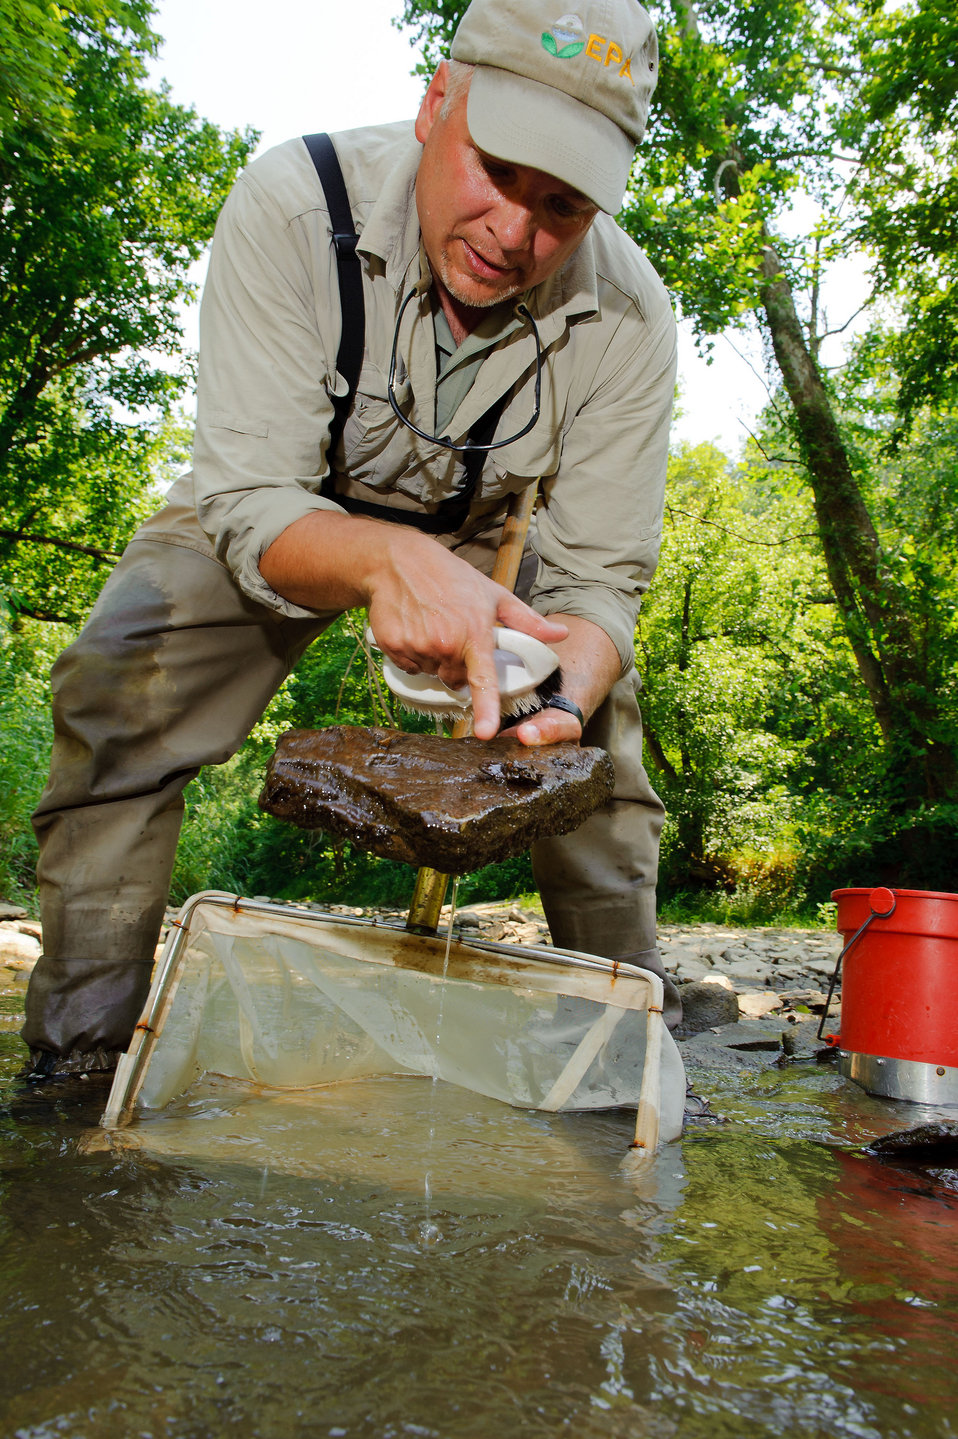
June 20, 2012 Collecting Aquatic Insects in Wheeling Creek in West Virginia

Frank Borsuk of EPA collects aquatic insects that live in the bottom parts of Wheeling Creek in West Virginia. These insects are biological indicators, groups or types of biological resources that can be used to assess environmental condition.